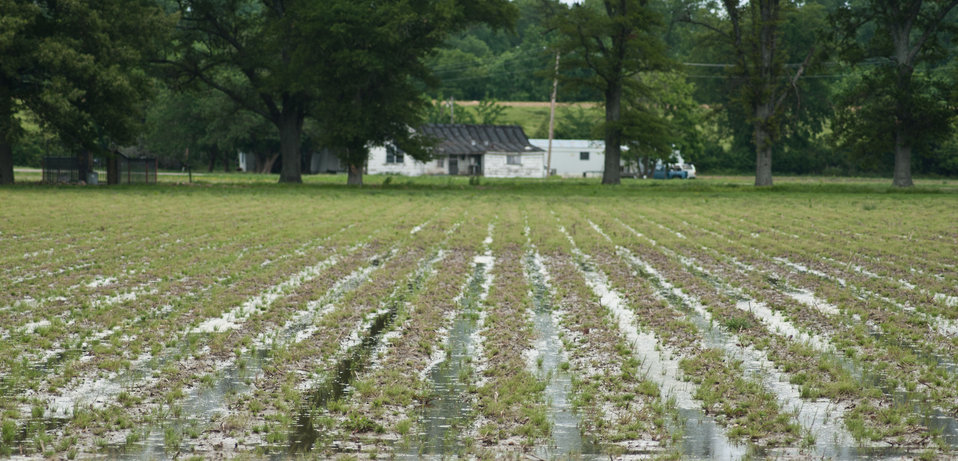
Floods waters from Mississippi River inundated casinos and farms that surround Tunica, MS, on Sunday, May 15. 2011.